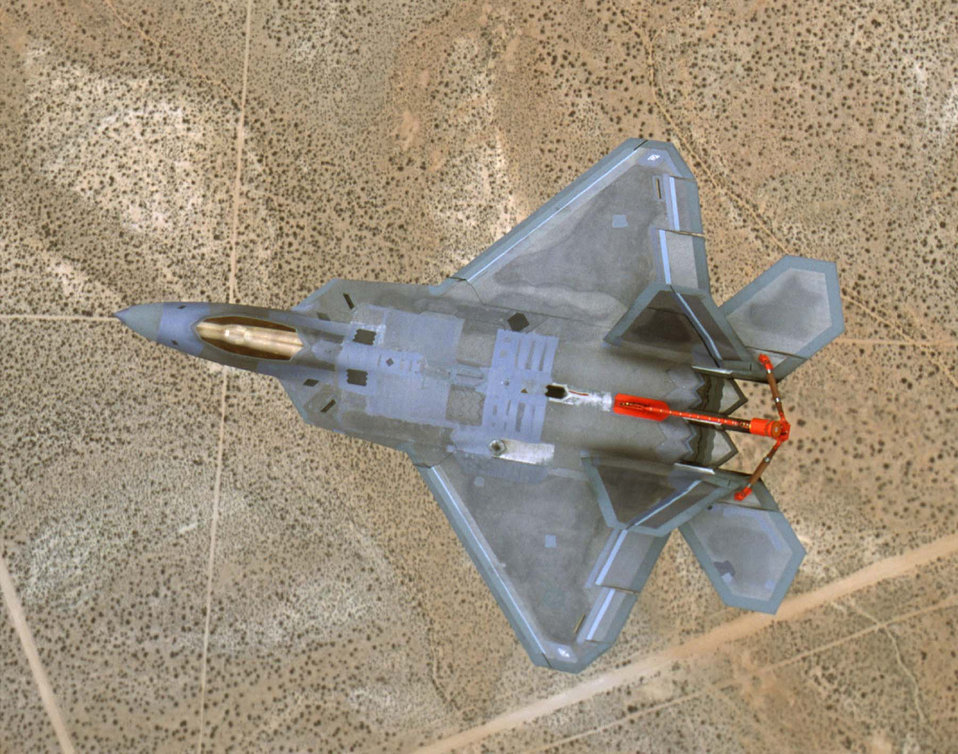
F/A-22 Raptor

FILE PHOTO -- Updated modeling and simulation tools, such as the Advanced Flight Propulsion Data Validation/Analysis System, will allow the F/A-22 Combined Test Force here to make further predictions when the Raptor begins to step out of the flight envelope during future testing.